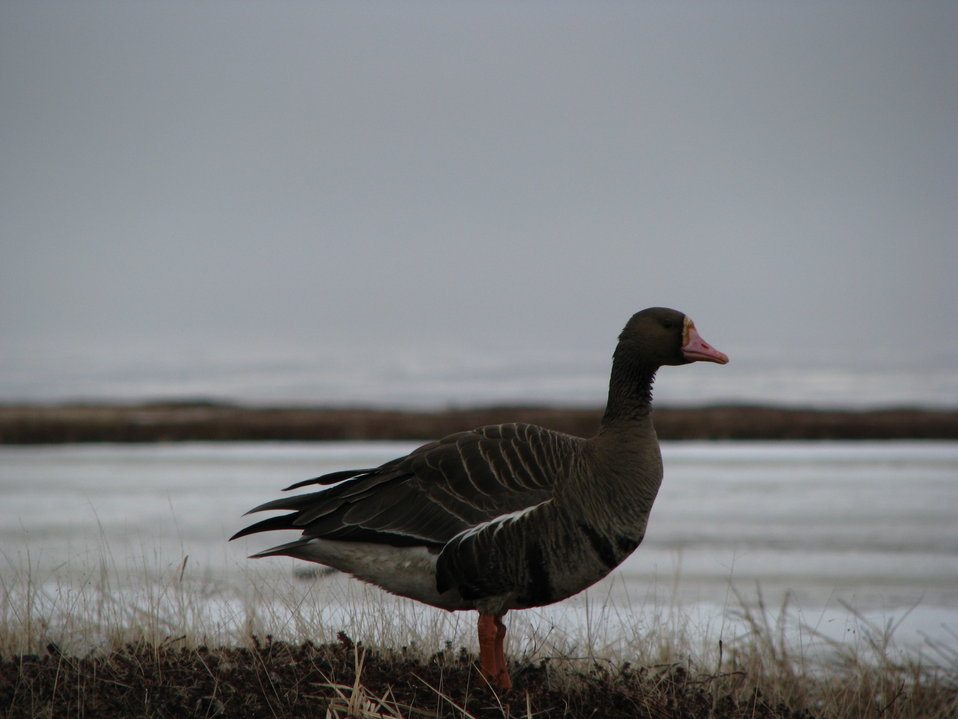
White fronted goose

USFWS Yukon Delta NWR